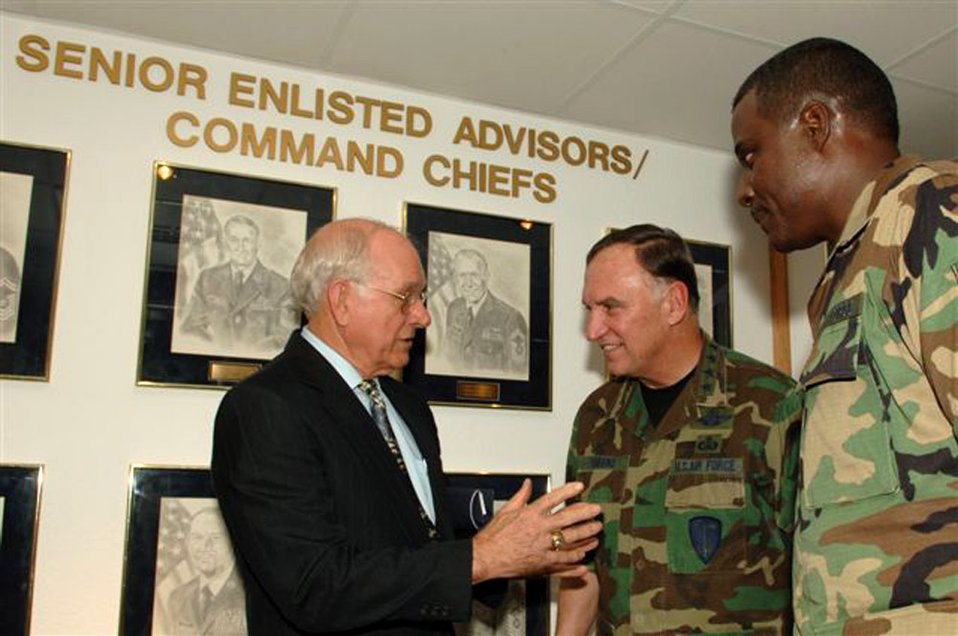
Enlisted heritage room pays tribute to CMSAF Parish

Former Chief Master Sergeant of the Air Force Sam E. Parish talks with U.S. Air Forces in Europe Commander Gen. William T. Hobbins (center) and USAFE Command Chief Master Sgt. Gary Coleman inside the Parish Enlisted Heritage Room after a ceremony marking the opening of the room bearing his name.